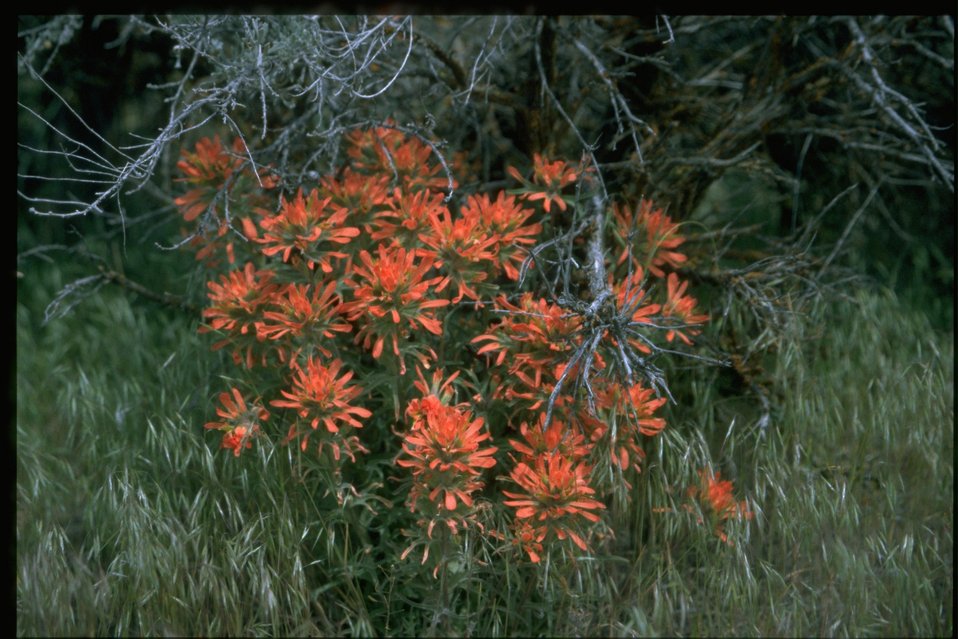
Medium shot of Indian Paintbrush (Castilleja linariaefolia).